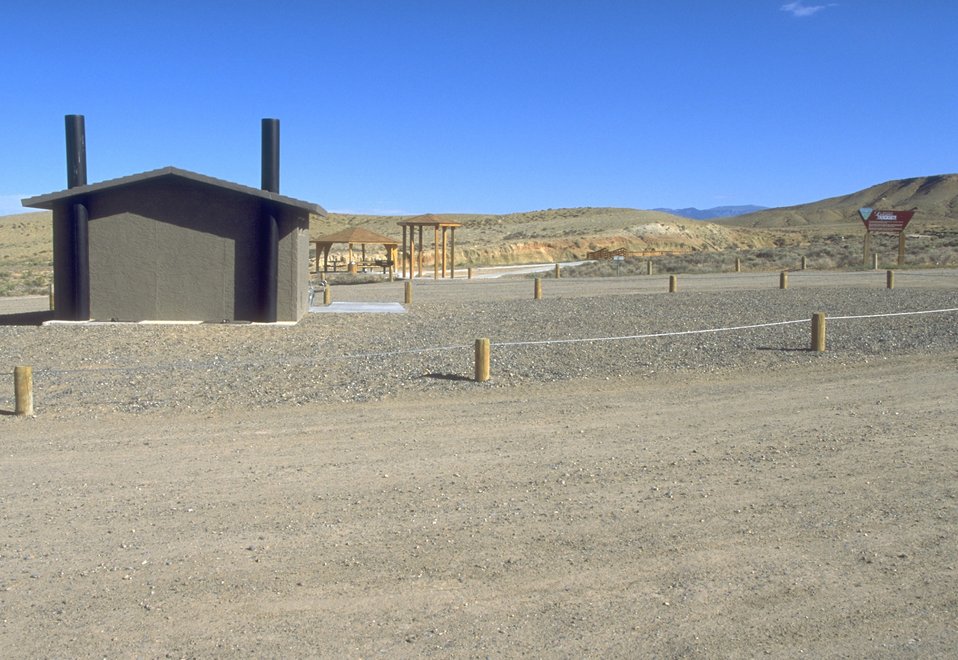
Red Gulch Dinosaur Tracksite showing some of the developed facilities, along Red Gulch/Alkali Back Country Byway, Worland Field Office.